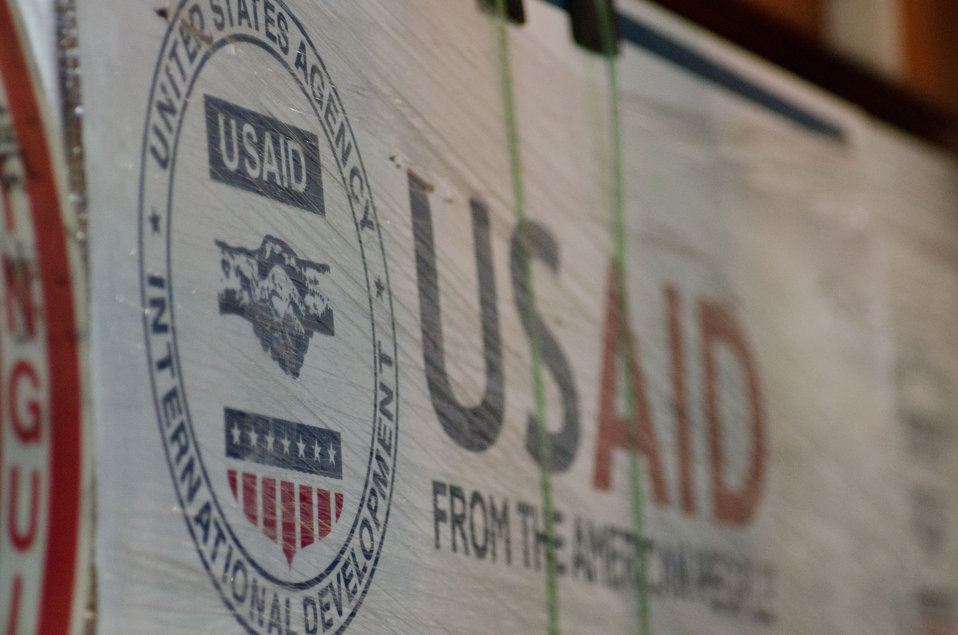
Crowley Logistics in Miami, FL on Friday, August 26, 2011 is one of three U.S. Agency for International Development (USAID) shipping and logistics facilities in the nation. In times of emergency humanitarian relief aid, they can respond with supplies delivered to aircraft at Miami International Airport within two hours. They utilize articulating forklifts, which hinge in the middle to store and retrieve pallets of supplies through narrow aisle ways. This allows for a higher density of stored supplies in the warehouse. Pallets of supplies are stacked three levels high. USAID provides humanitarian assistance through the Office of U.S. Foreign Disaster Assistance (OFDA). OFDA is the lead U.S. Government (USG) office charged with providing and coordinating USG humanitarian assistance in response to international emergencies and disasters. To achieve this, USAID works in cooperation with other USG offices such as the U.S. Department of Agriculture (USDA), and international humanitarian experts. The USDA provides food assistance to support emergency feeding programs in countries experiencing food shortages due to drought and civil conflict.